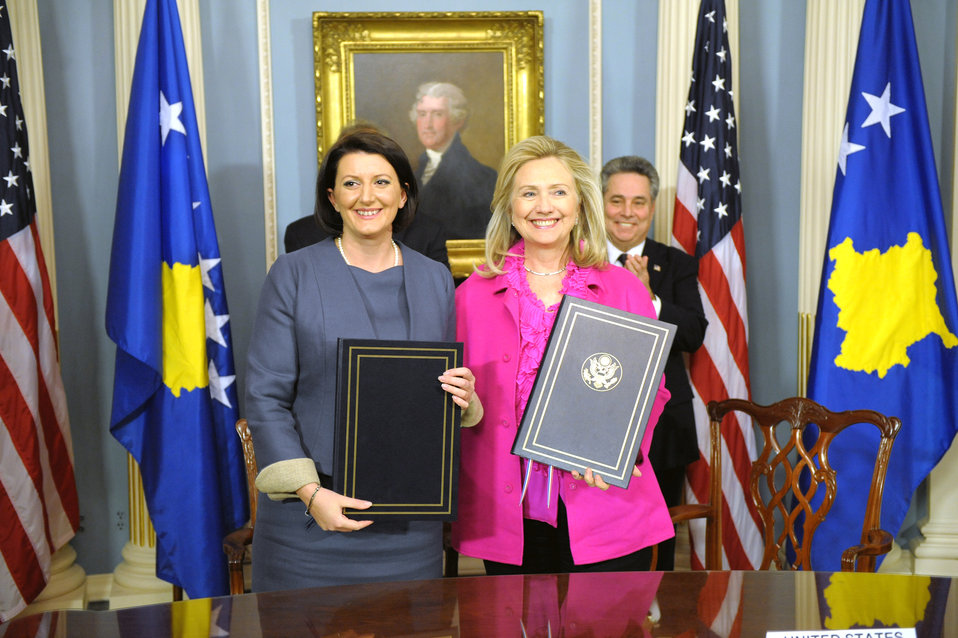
Secretary Clinton and President of Kosovo Jahjaga Sign U.S.-Kosovo Agreement on Protection, Preservation of Certain Cultural Properties

U.S. Secretary of State Hillary Rodham Clinton and President of Kosovo Atifete Jahjaga sign the U.S.-Kosovo Agreement on the Protection and Preservation of Certain Cultural Properties, at the U.S. Department of State in Washington, D.C., on December 14, 2011.